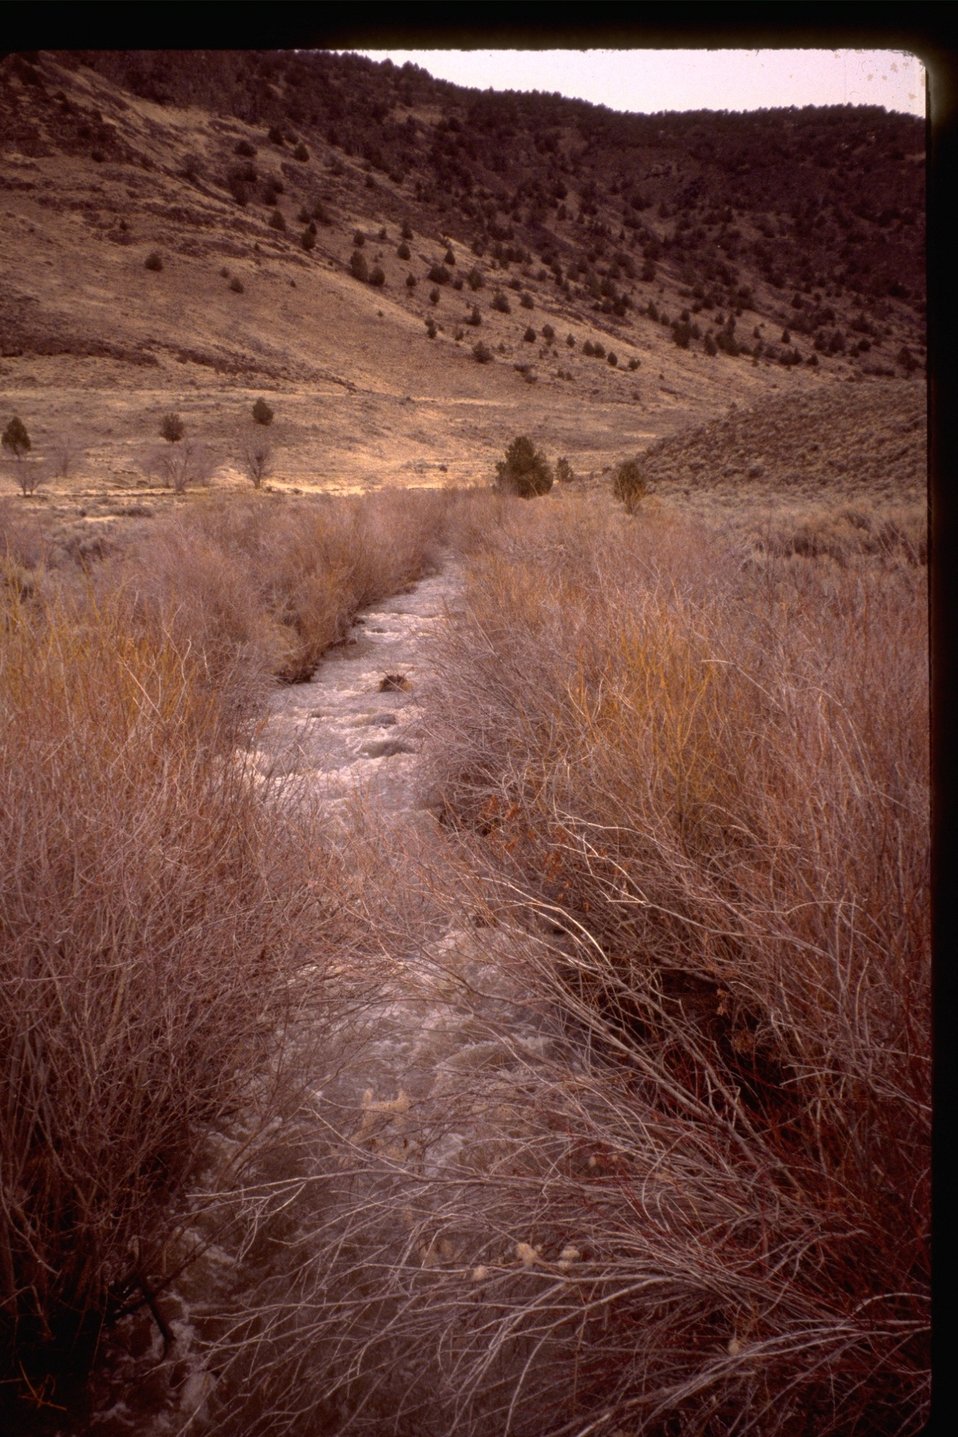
Early spring/late winter, riparian area along Home Creek in Home Creek Canyon of Catlow Valley on Steens Mountain.